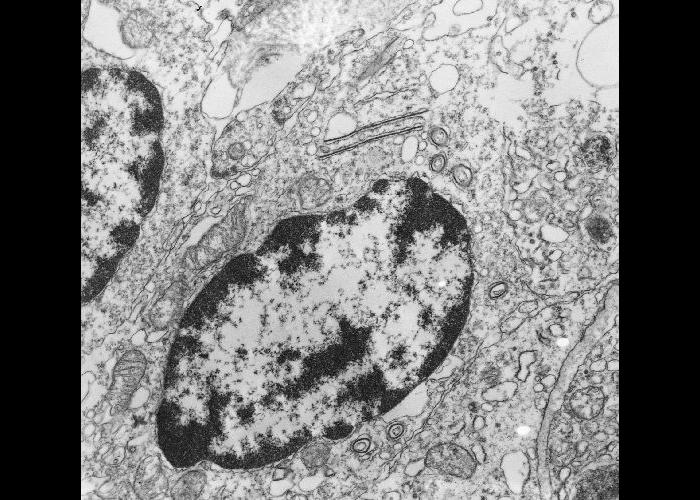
This transmission electron micrograph (TEM) depicts cylindrical confronting cisternae in cytoplasm of lymph node lymphocyte.